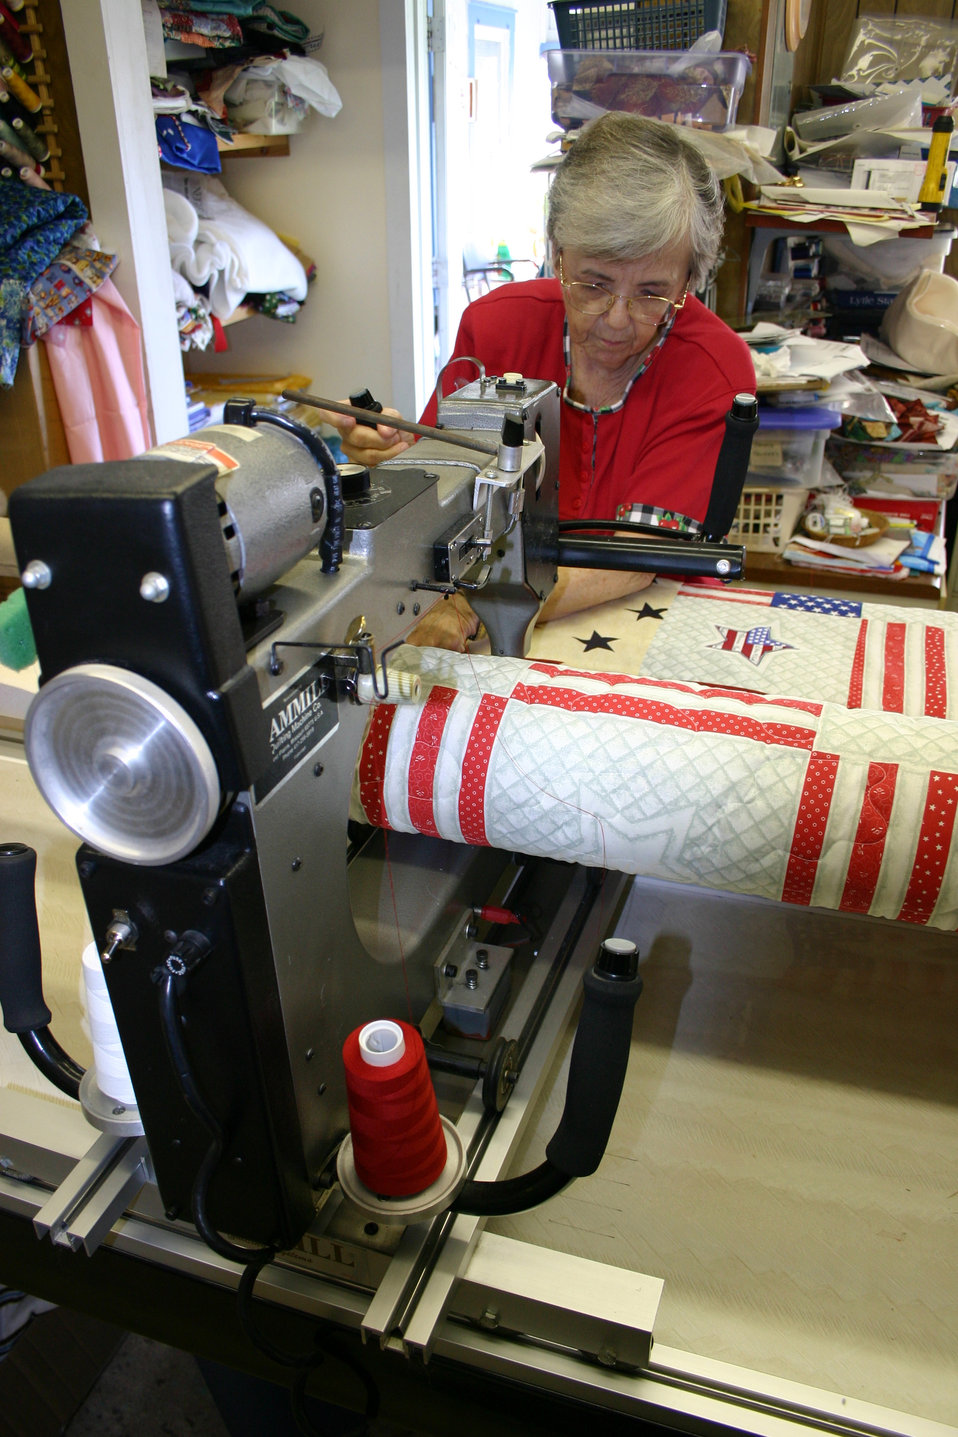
Support for wounded warriors reaches across America

LYTLE, Texas -- Louis Smith adds a pattern to a lap quilt for a wounded servicemember.